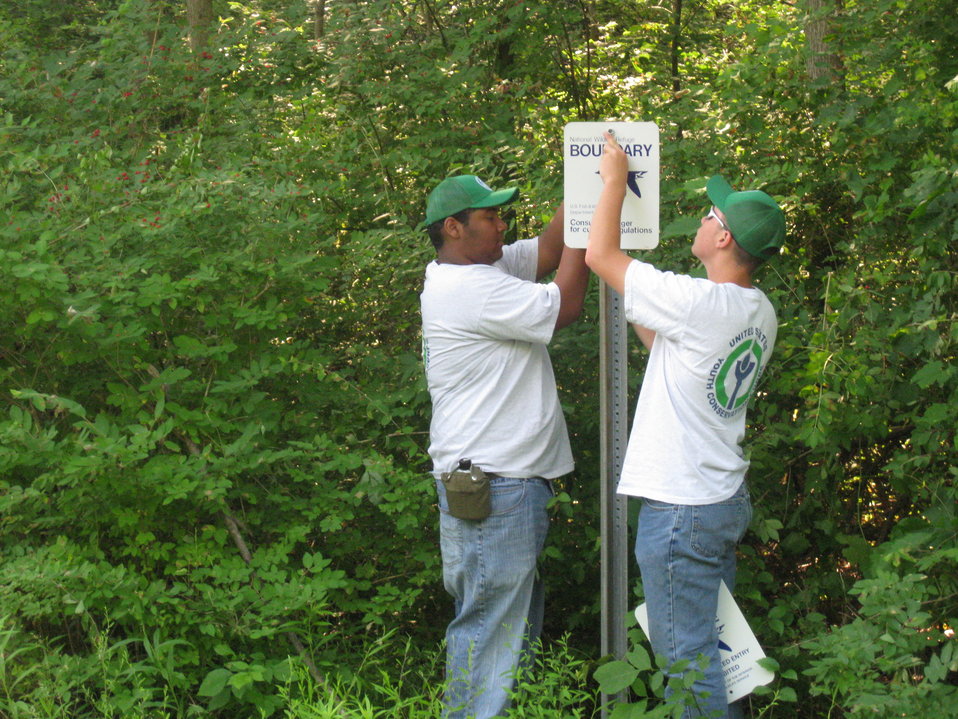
Boundary signs

YCC crew members work on boundary posting at Iroquois National Wildlife Refuge.